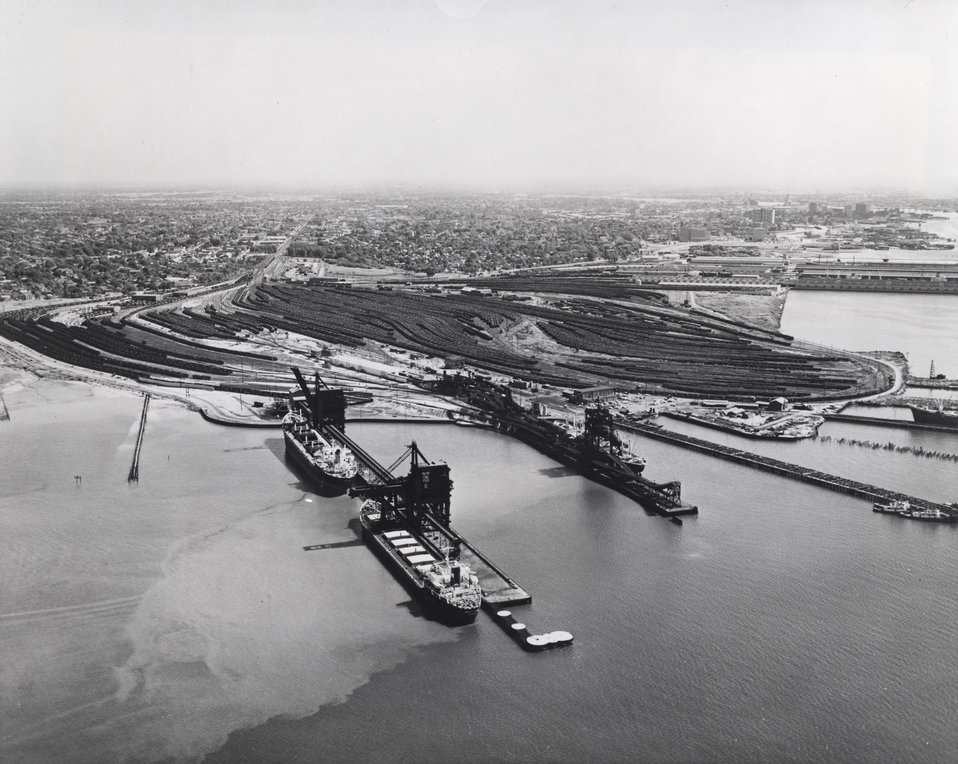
Two colliers take on cargoes of bituminous coal from the Norfolk and Western Railways Pier 6 at Norfolk, VA.
c.1969